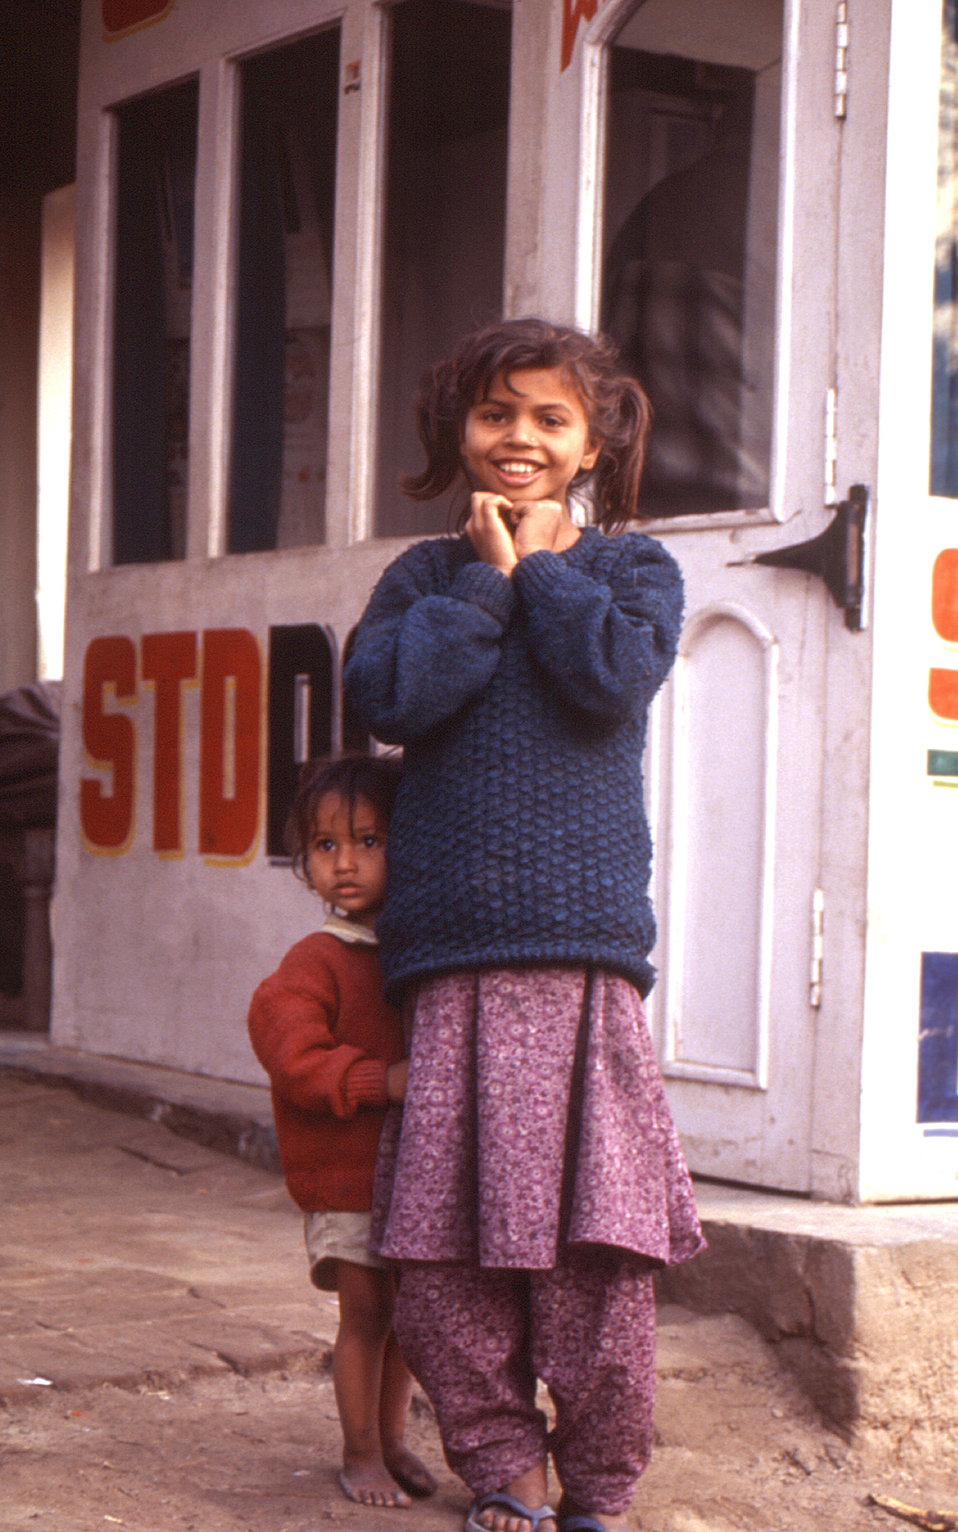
This 2000 image depicted two Indian children who were standing outside a telephone booth in Gorakhpur, India. This photograph was provided by Chris Zahniser, B.S.N., R.N., M.P.H., a STOP Transmission of Polio (STOP) immunization initiative team member and photographer who was assigned to the state of Uttar Pradesh in northern India, and spent three months working in the Districts of Gorakhpur and Deoria.